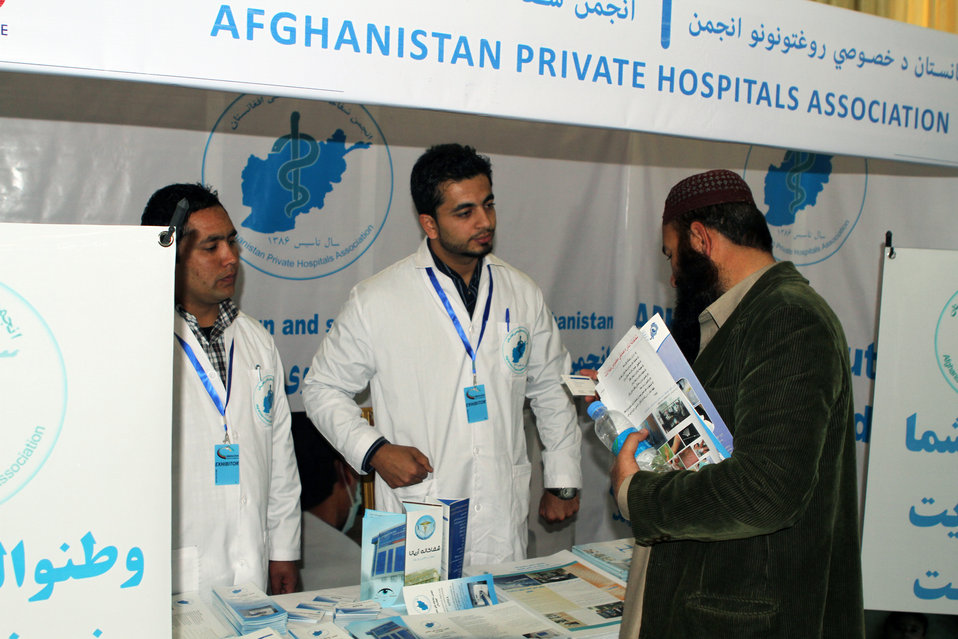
Member of Kabul Chamber of Commerce and Industries in India-Afghanistan Innovation Partnership Fair in Kabul.